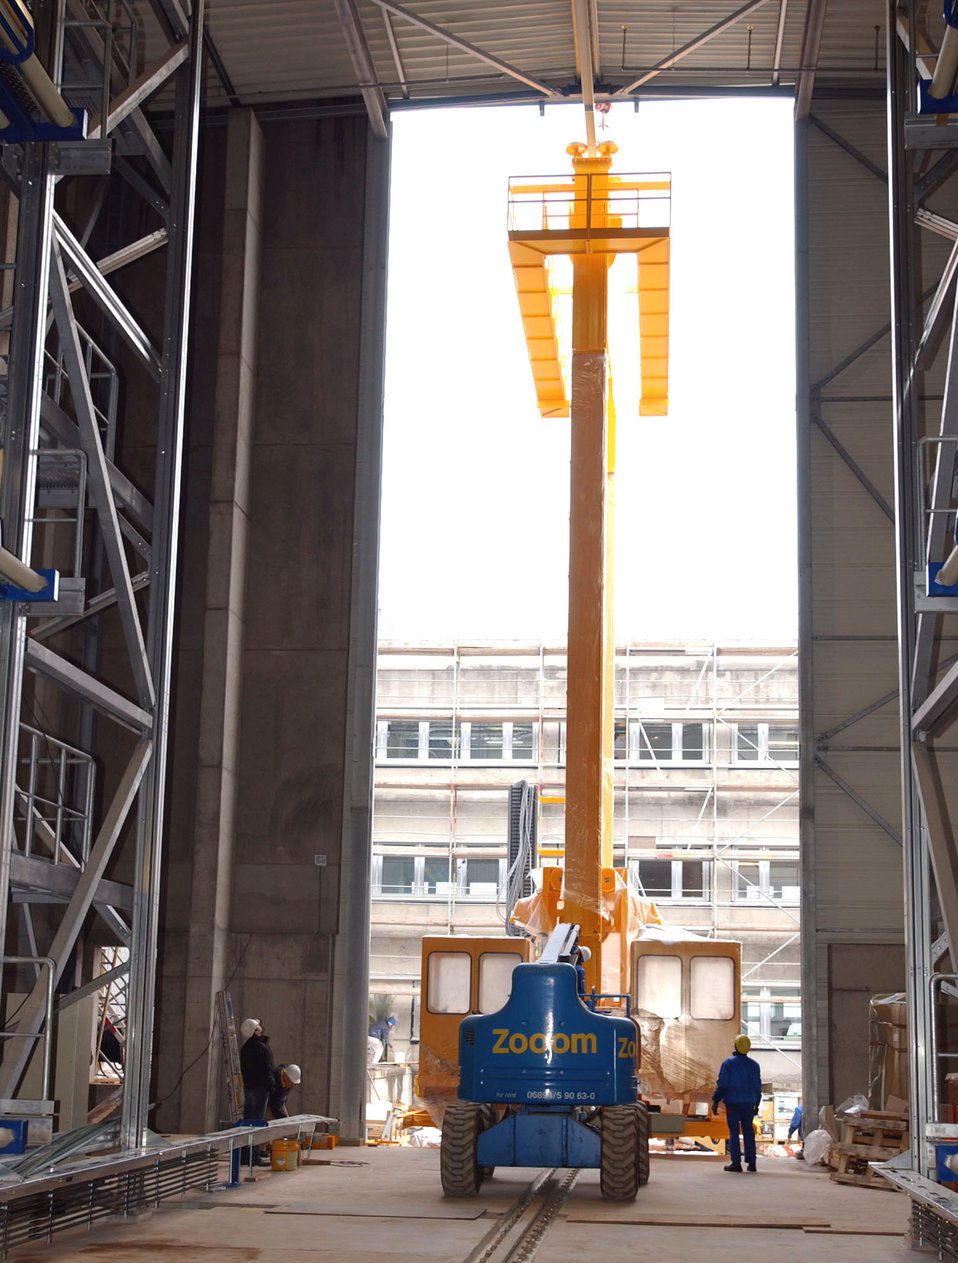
Transfer vehicle

RAMSTEIN AIR BASE, Germany (AFPN) -- The Elevated Transfer Vehicle is the